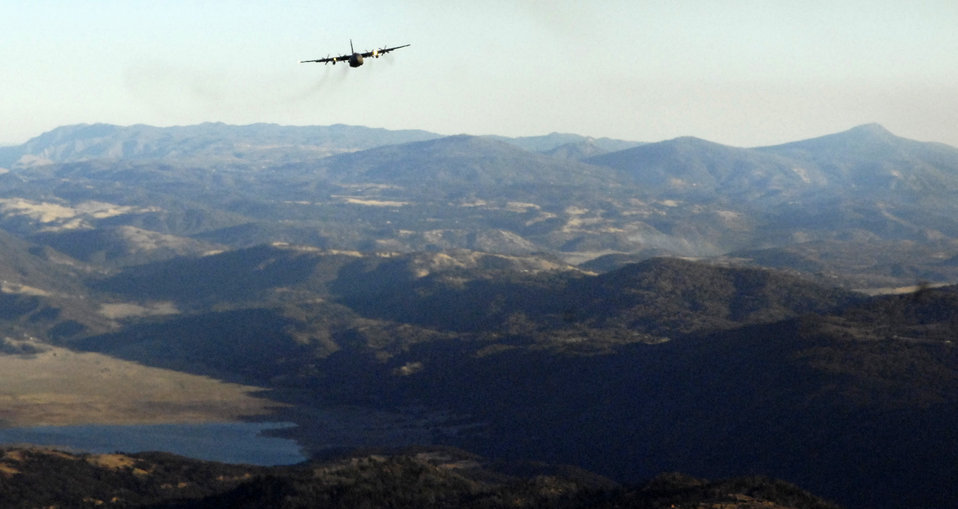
C-130s fight California wildfires

A C-130 Hercules launched from Channel Islands Air National Guard Station in California flies over San Diego County Oct. 24. Air Force Reserve Command Airmen assigned to the 302nd Airlift Wing from Peterson Air Force Base, Colo., are participating in the Southern California firefighting effort. Air Force Reserve Command sent two of its designated firefighting C-130H3 aircraft to help battle the raging wildfires in Southern California.